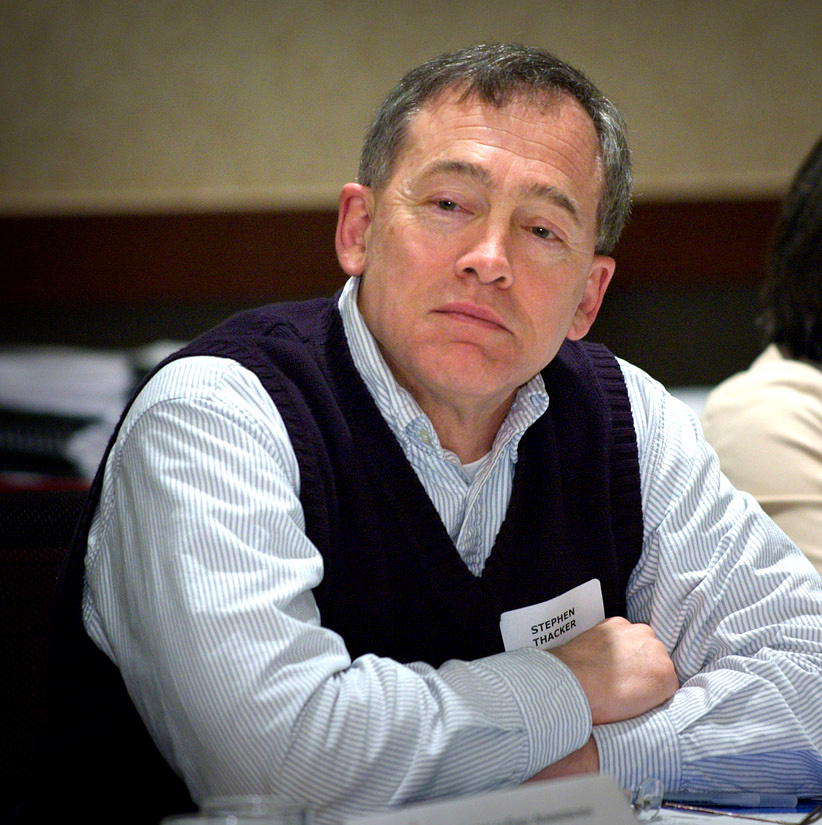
Shown here, seated at the dais during a 2005: Symposium on Diversity, Leadership Development and Succession Planning session entitled, 'Where We Are, Where We Need to Be', was Stephen B. Thacker, M.Sc., M.D. Seated to Dr. Thacker's left, was former CDC Director (2002 - 2008), Julie Louise Gerberding, M.D., M.P.H.